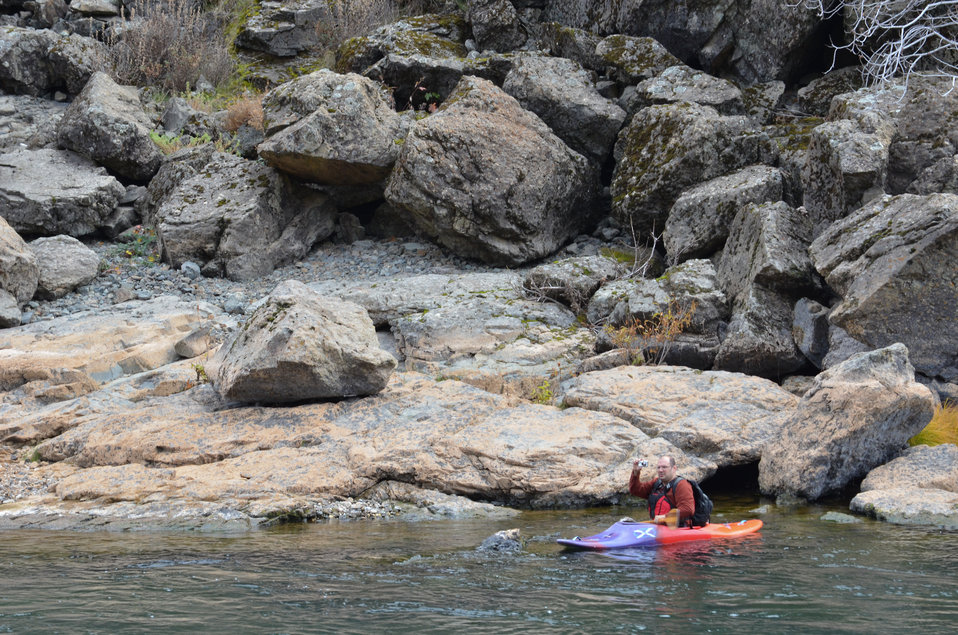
Building a 3-D model of Yuba River canyon

Dr. Greg Pasternack, hydrology professor at the University of California-Davis, photographs the Yuba River canyon below Englebright Dam near Smartsville, Calif., Jan. 6, 2012. Pasternack will compile the images to create a virtual 3-D model of the river canyon to aid future research. Under the direction of the National Marine Fisheries Service, the U.S. Army Corps of Engineers Sacramento District, which owns and manages the dam, has placed more than 5,000 tons of gravel in the river to improve spawning habitat for the threatened Chinook salmon and steelhead trout species. Pasternack designed the gravel injection project and is evaluating the gravel’s movement through the river course.